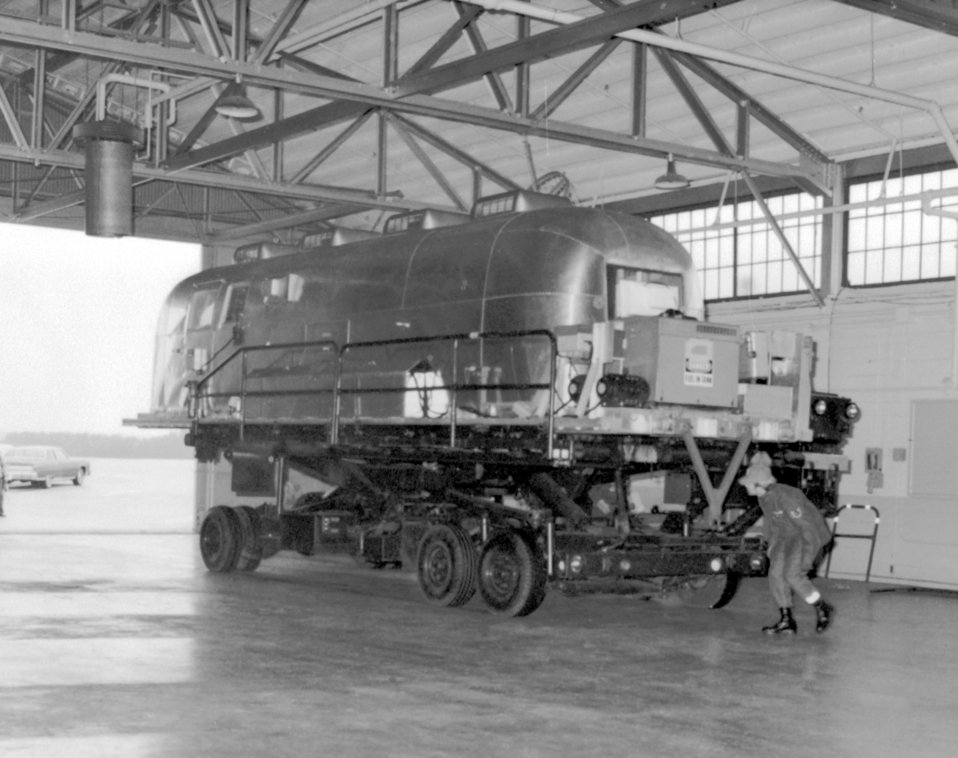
Lunar Receiving Station as it was being unloaded in 1976 at Dobbins Air Force Base, GA.